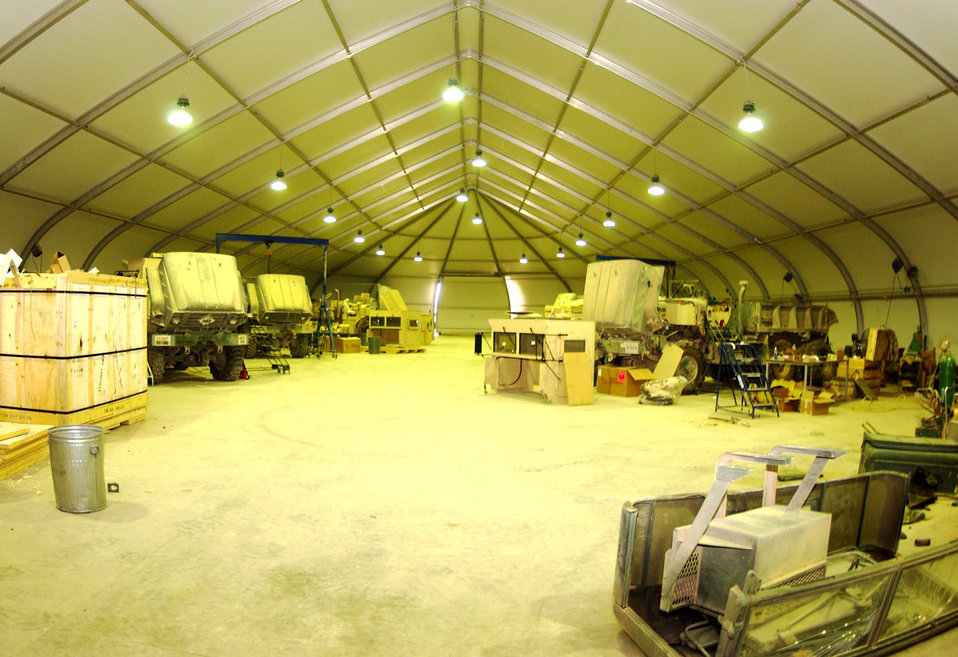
Airmen add armor to convoy vehicles

BALAD AIR BASE, Iraq -- The 732nd Expeditionary Mission Support Group's add-on armor shop Airmen can add armor to a large truck in about 72 man-hours. The shop comprises active-duty, Guard and Reserve Airmen.